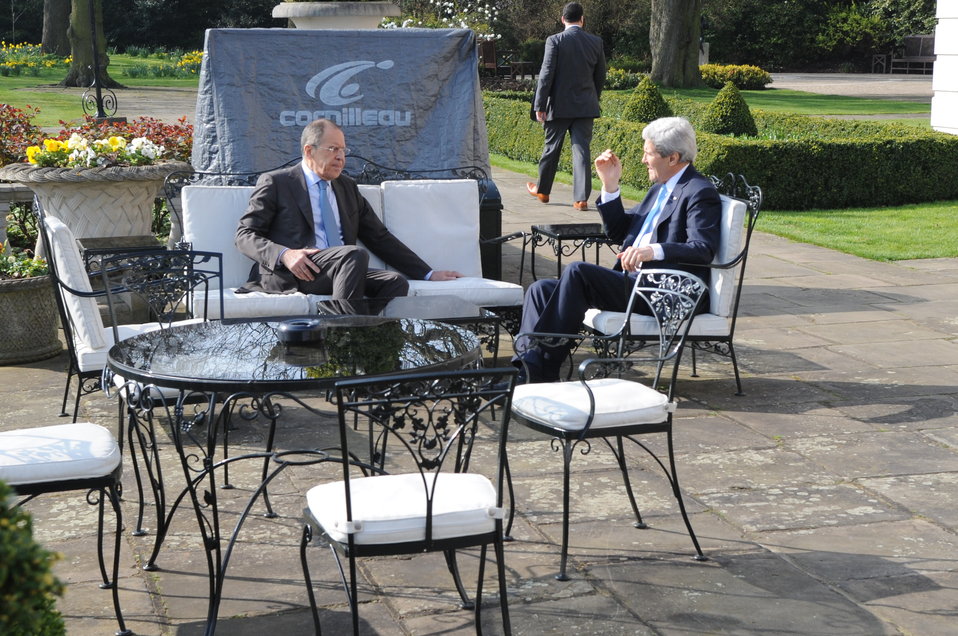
Secretary Kerry, Russian Foreign Minister Lavrov Hold One-on-One Meeting in London

U.S. Secretary of State John Kerry and Russian Foreign Minister Sergey Lavrov hold a brief one-on-one conversation on the patio at Winfield House, the U.S. Ambassador's Residence in London, United Kingdom, before the start of a formal bilateral discussion focused on Russian intervention in Crimea on March 14, 2014.